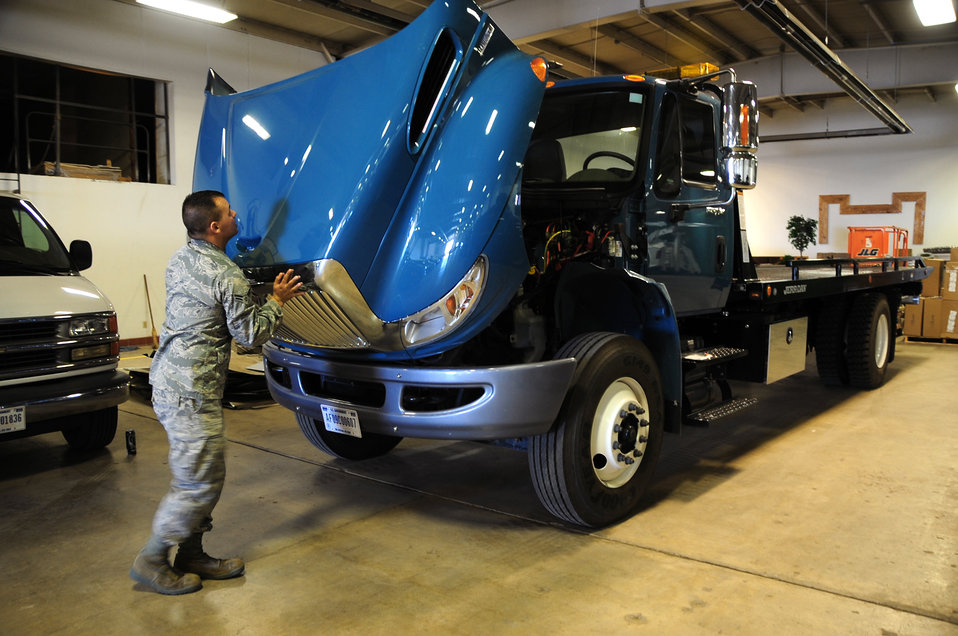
Taking it to the streets

Airman 1st Class Gregory Hulett, a vehicle operator with the 28th Logistics Readiness Squadron, does a pre-operational check on a flatbed truck, Oct. 6, 2010, at Ellsworth Air Force Base, S.D. While the handling and delivery of cargo is a primary function of the vehicle operations control center shop, it’s not the only role they are required to fill in support of missions both stateside and downrange.